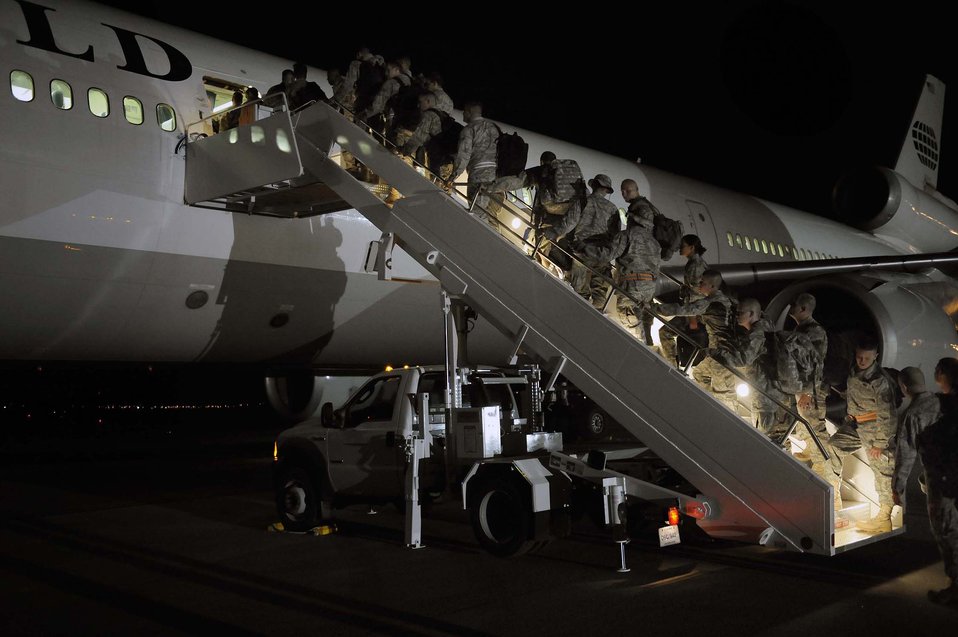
Airmen deploy to Southwest Asia

Airmen representing various specialties board an airplane from Ellsworth Air Force Base, S.D. Ellsworth Airmen in various roles deployed in support of operations in Southwest Asia.